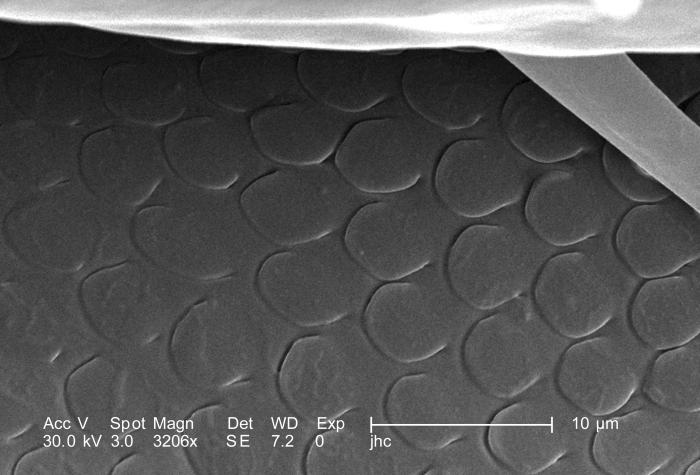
Under a magnification of 3206X, four times greater than PHIL 9965, this scanning electron micrograph (SEM) depicted a dorsal view of an unidentified male Dermacentor sp. tick found upon a cat in the suburbs of Decatur, Georgia, which measured approximately 3.5mm from its gnathosoma (i.e., capitulum), which is where its mouthparts are located, to the distal abdominal margin (PHIL 9961). Note in PHIL 9959 and 9960, that the entire dorsum of this tick's abdomen is covered by its tough 'scutum', or 'shield', categorizing it as a male. In female Ixodid-species ticks, the scutum only partially covers the dorsal abdomen. Revealed in this image is the base of the hypostome, which is one of the tick's mouthparts that acts to pierce the host skin surface, thereby, anchoring the tick to the host as it obtains its blood meal. See PHIL 9964 for another view of the foliated hypostomal surface, which begins here as small scales.